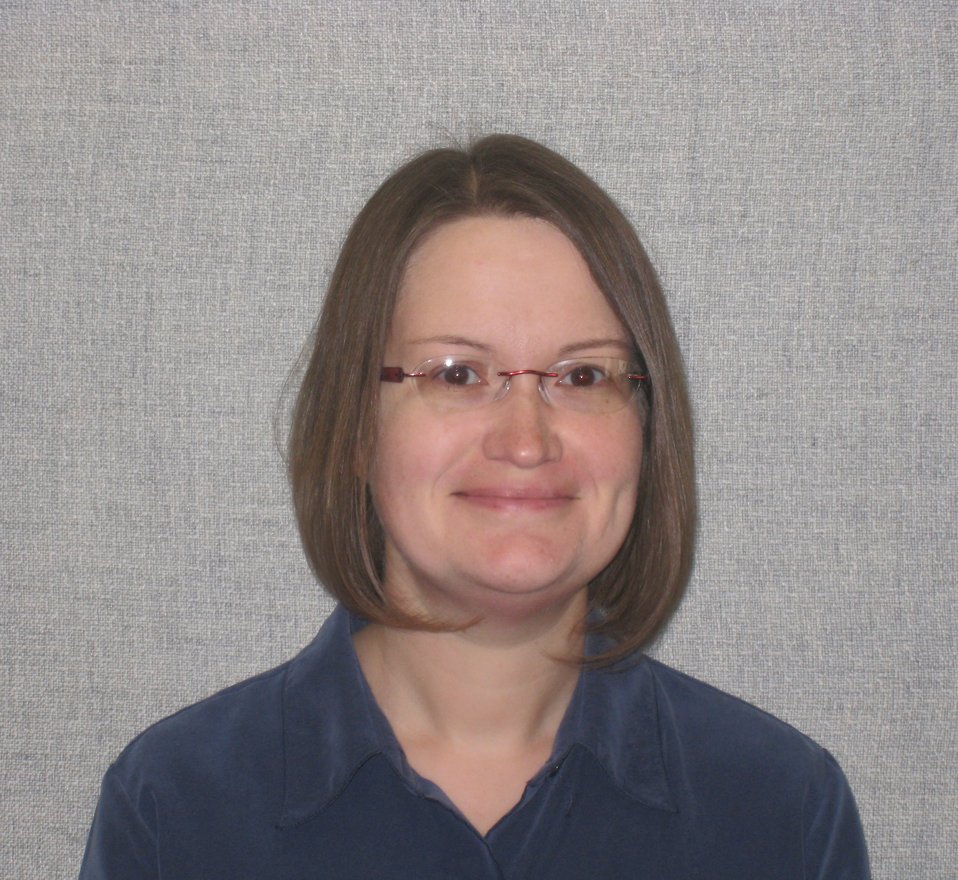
Karen Scarfone